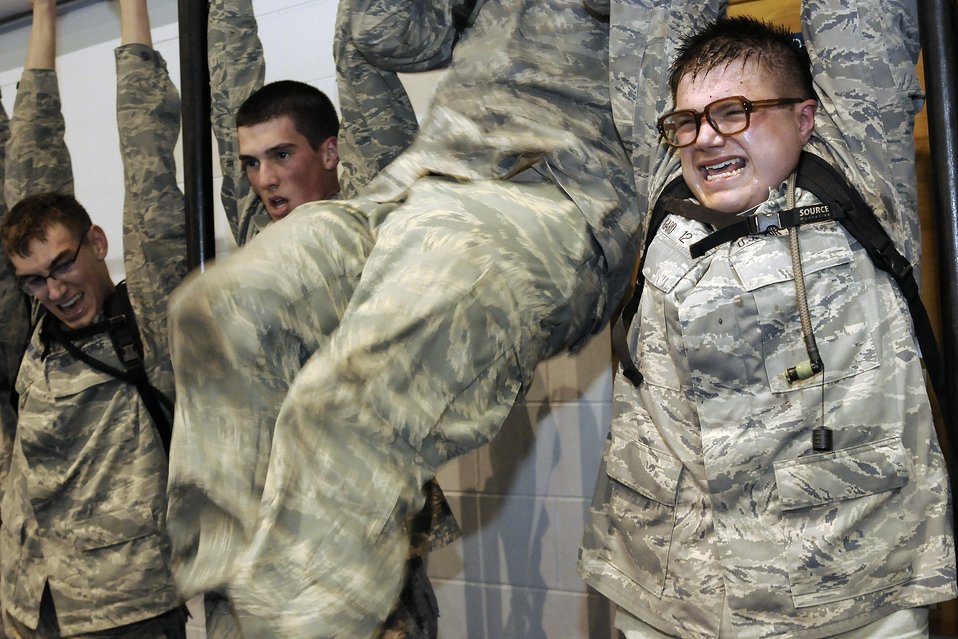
US Air Force Academy, CO

Cadet 4th Class Troy Agard performs pull-ups on the assault course during Recognition. Recognition marks the transition of the fourth classmen to upper class status. It is the ceremonial acknowledgement that the fourth class has successfully met the training requirements expected of it, and is prepared to continue its four-year journey through the Academy.